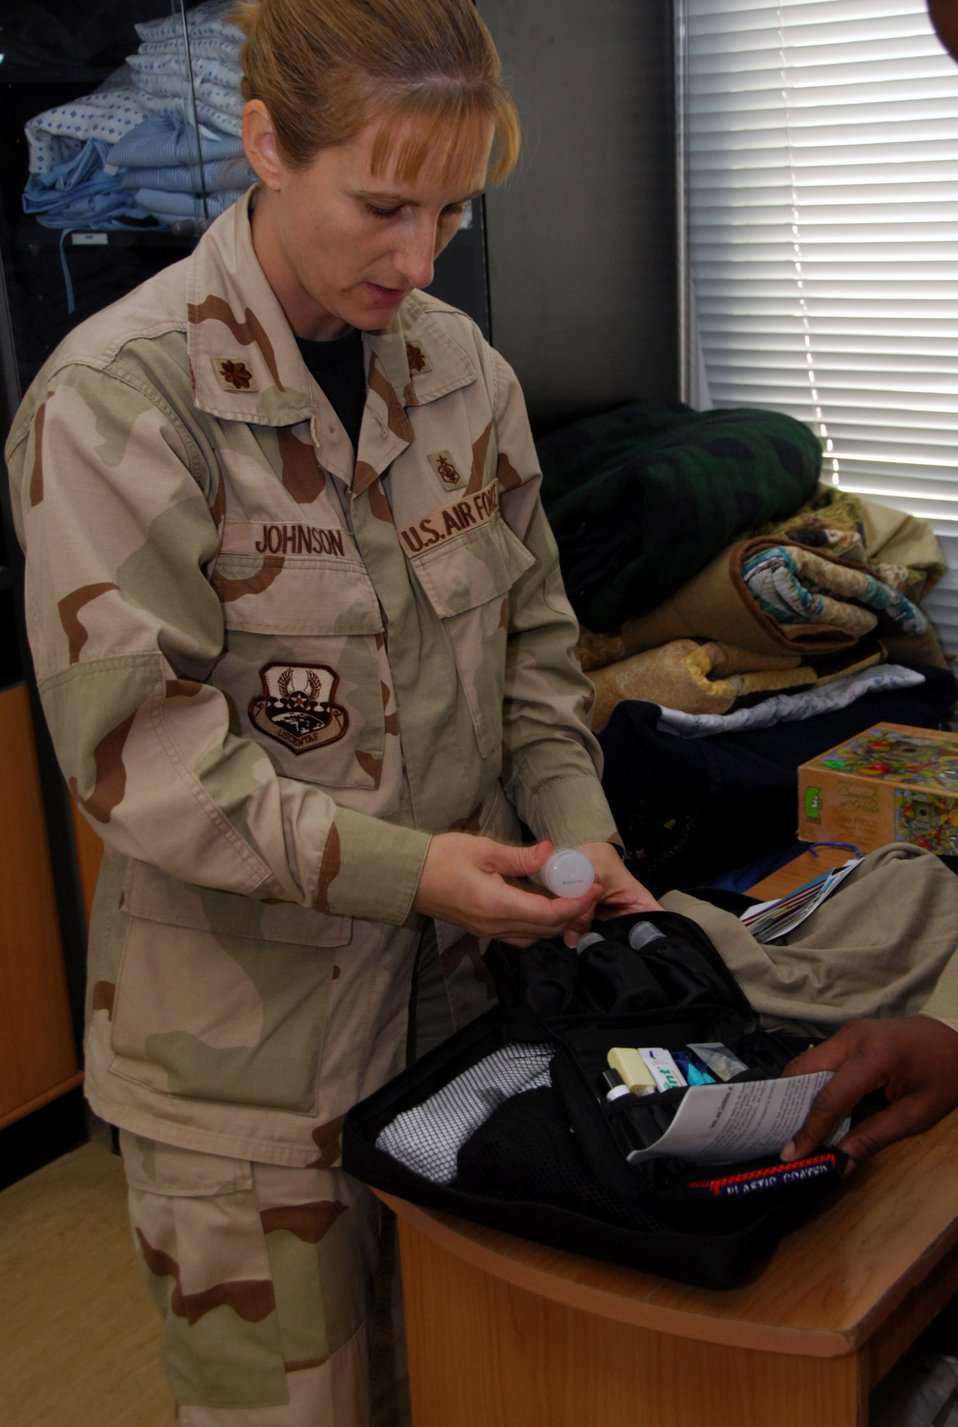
Warriors with mild to moderate injuries staying near the fight

Maj. Nancy Johnson sorts through a transitional care pack Nov. 12 at the 379th Expeditionary Medical Group in Southwest Asia. The packs are designed with essential care and comfort items for those in the Wounded Warrior Wingman program. The program helps make the warrior's stay at the unit more enjoyable through mentoring and wingman buddy care. Major Johnson is the chief nurse for the 379th EMG.